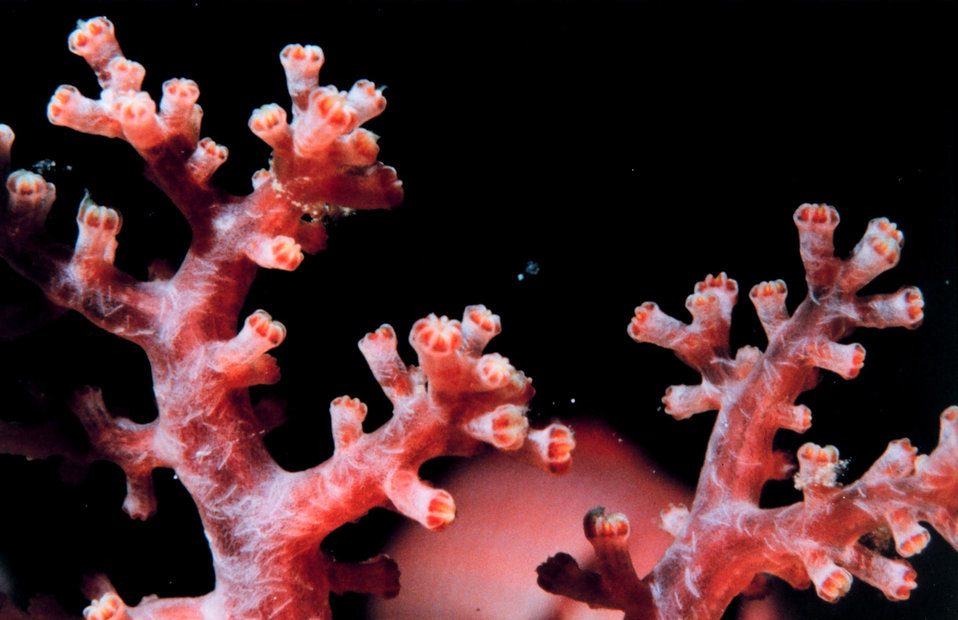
Carnation coral - Dendronephthya sp.